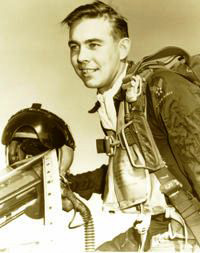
51st Fighter Wing Aces

Capt. Harold Fischer became the eighth ace of the wing on Jan. 24, 1953. He became the first double ace of the wing on March 1, 1953, and was assigned to the 39th Fighter-Interceptor Squadron. Capt. Fischer was shot down and captured by the enemy April 7, 1953. He was released as a prisoner of war in Hong Kong on May 31, 1955.